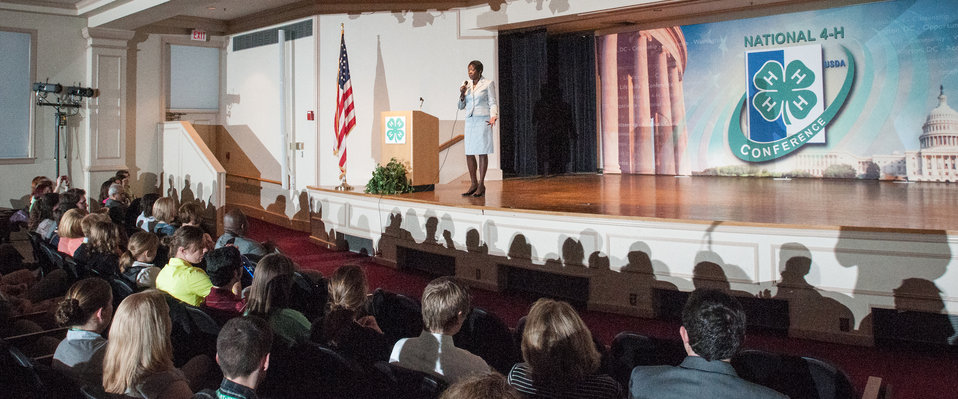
U.S. Department of Agriculture (USDA) Departmental Management Office of Advocacy and Outreach Director Carolyn Parker provided opening remarks to approximately 300 youth members, Extension Educators and 4-H Adult Volunteers from across the nation, as well as U.S. Territories at the 2013 National 4-H Conference, on Monday, April 8, 2013 in Chevy Chase, MD. National Institute of Food and Agriculture Director Dr. Sonny Ramaswamy provide additional remarks and Secretary Tom Vilsack will deliver the keynote address. The youth delegates are in grades 10-12 (15-19 years old). The purpose of the conference is to 1) engage 4-H youth in personal development experiences that will increase knowledge, resources, and skills; 2) discuss topics affecting youth and 4-H programming nationwide; and 3) empower and mobilize 4-H youth to create positive social change in their communities in a meaningful and genuine way. The conference also reinforces the rich history of 4-H and its valuable tie to USDA, Cooperative Extension and the Land-Grant University System.